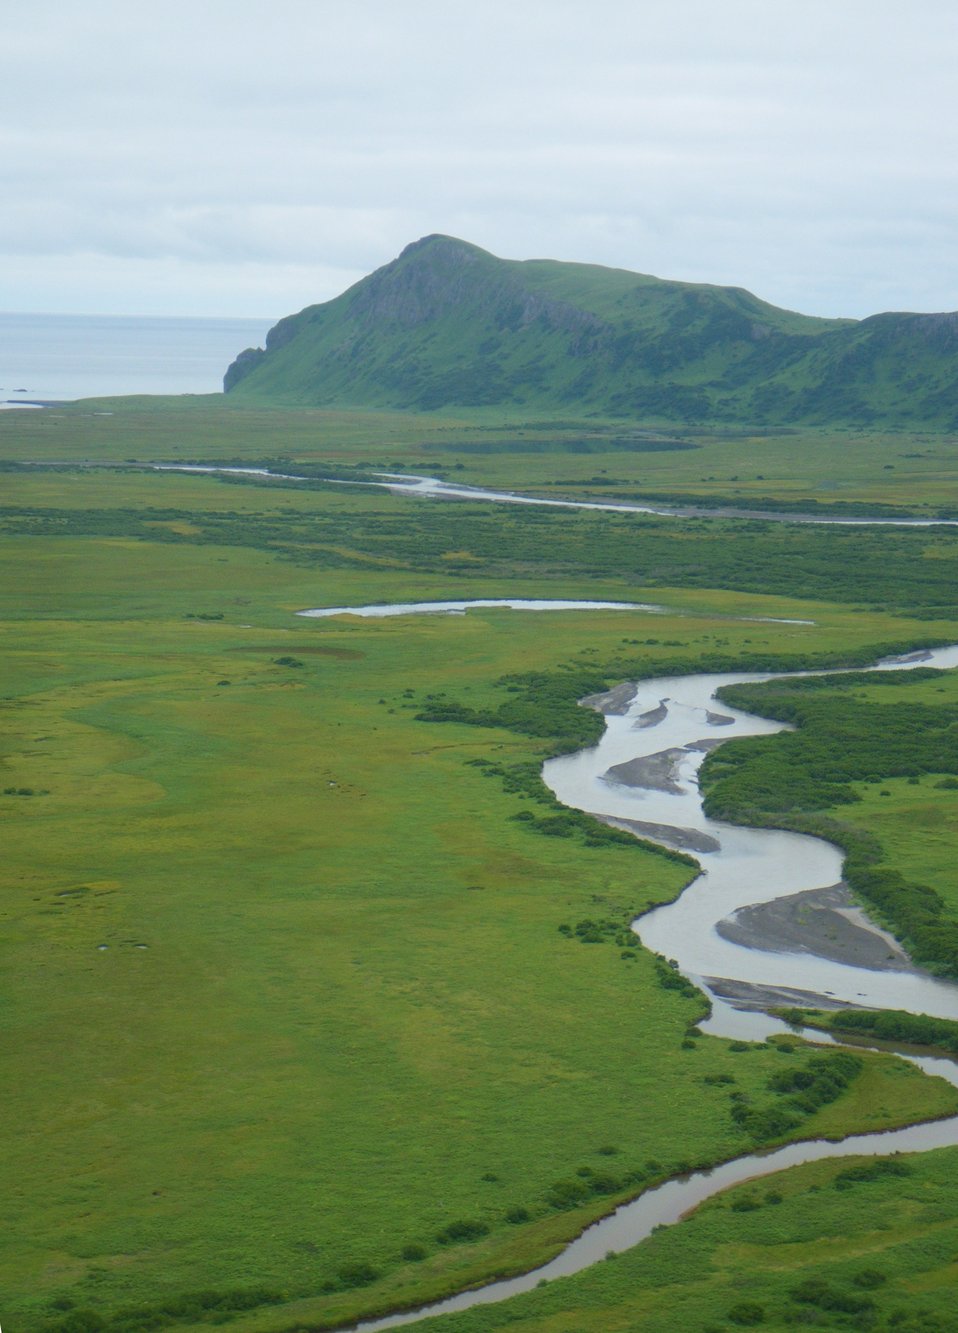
Unimak Landscapes

SE Unimak Island, Alaska Maritime National Wildlife Refuge